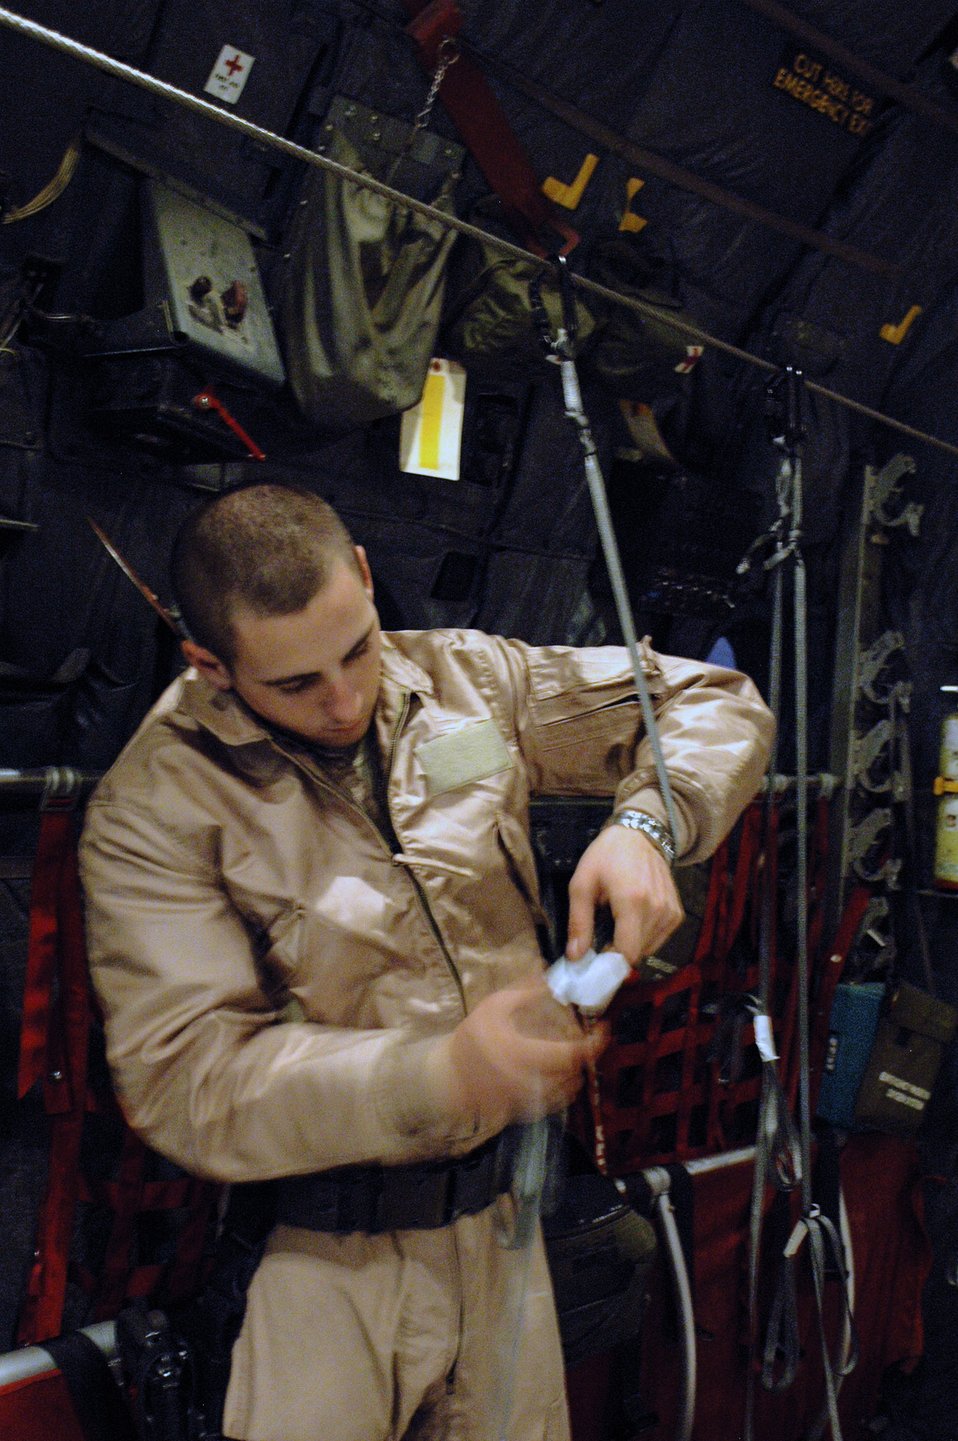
Airmen perform leaflet drop over Afghanistan

Senior Airman William Moody sets up static lines on board a C-130 Hercules to help rip open boxes of leaflets in October in Southwest Asia. The aircraft crew dropped 300,000 leaflets over an area of Afghanistan. Airman Moody is a 40th Expeditionary Airlift Squadron loadmaster.